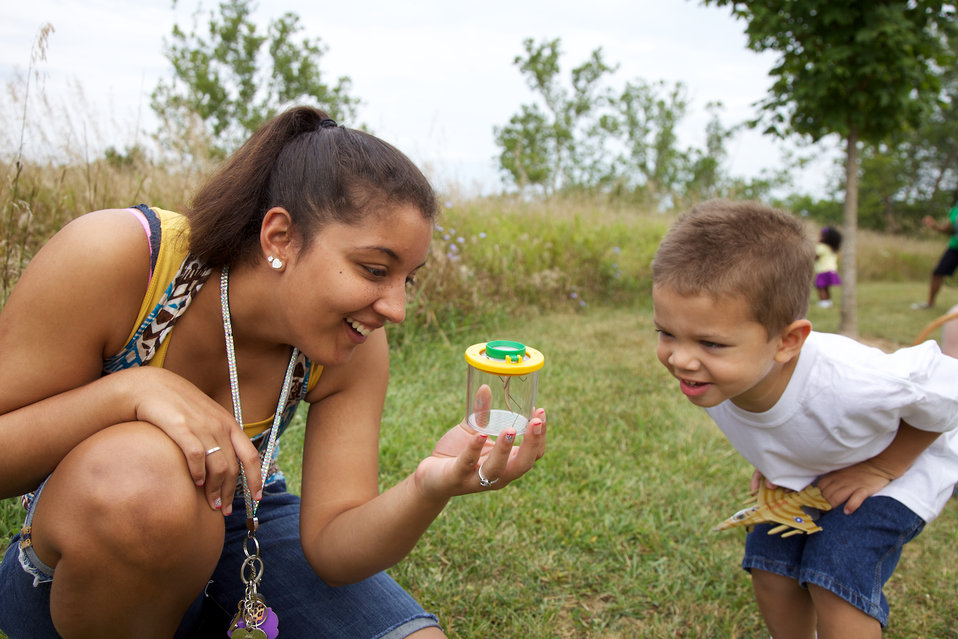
A family enjoying the outdoors.